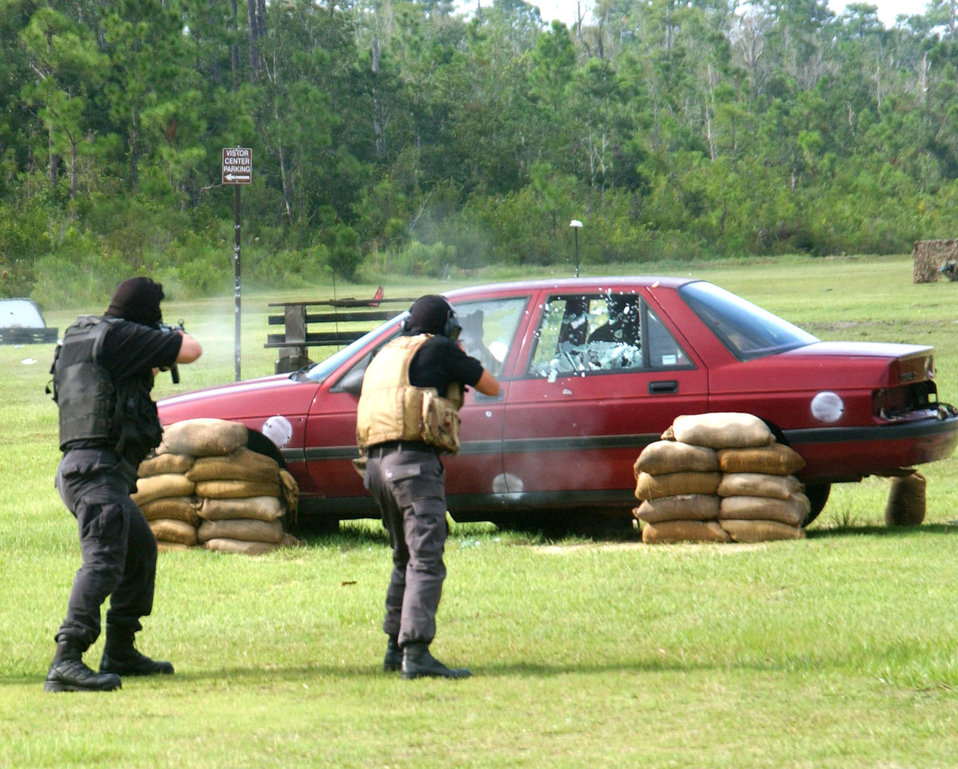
Dynamics of terrorism

Instructors from the U.S. Air Force Special Operations School's Dynamics of International Terrorism course at Hurlburt Field, Fla., demonstrate terrorist ambush techniques to students Sept. 13. The course offers students a basic awareness of the motivation, capabilities and threat posed by terrorist groups.